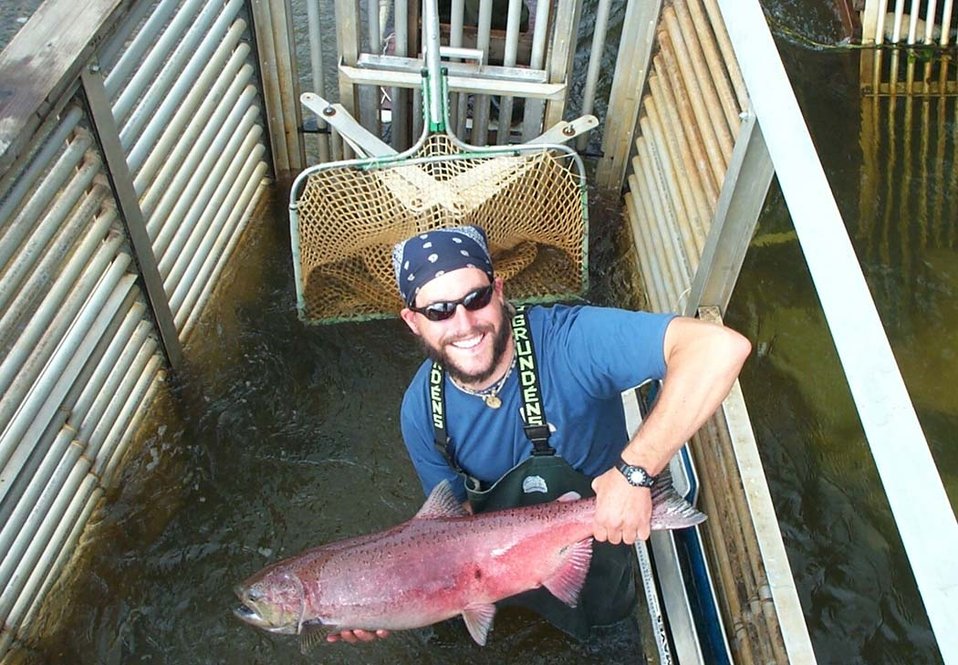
Chinook salmon at Yukon Delta NWR

A worker shows off a Chinook salmon at the Tuluksak River weir on Yukon Delta National Wildlife Refuge.